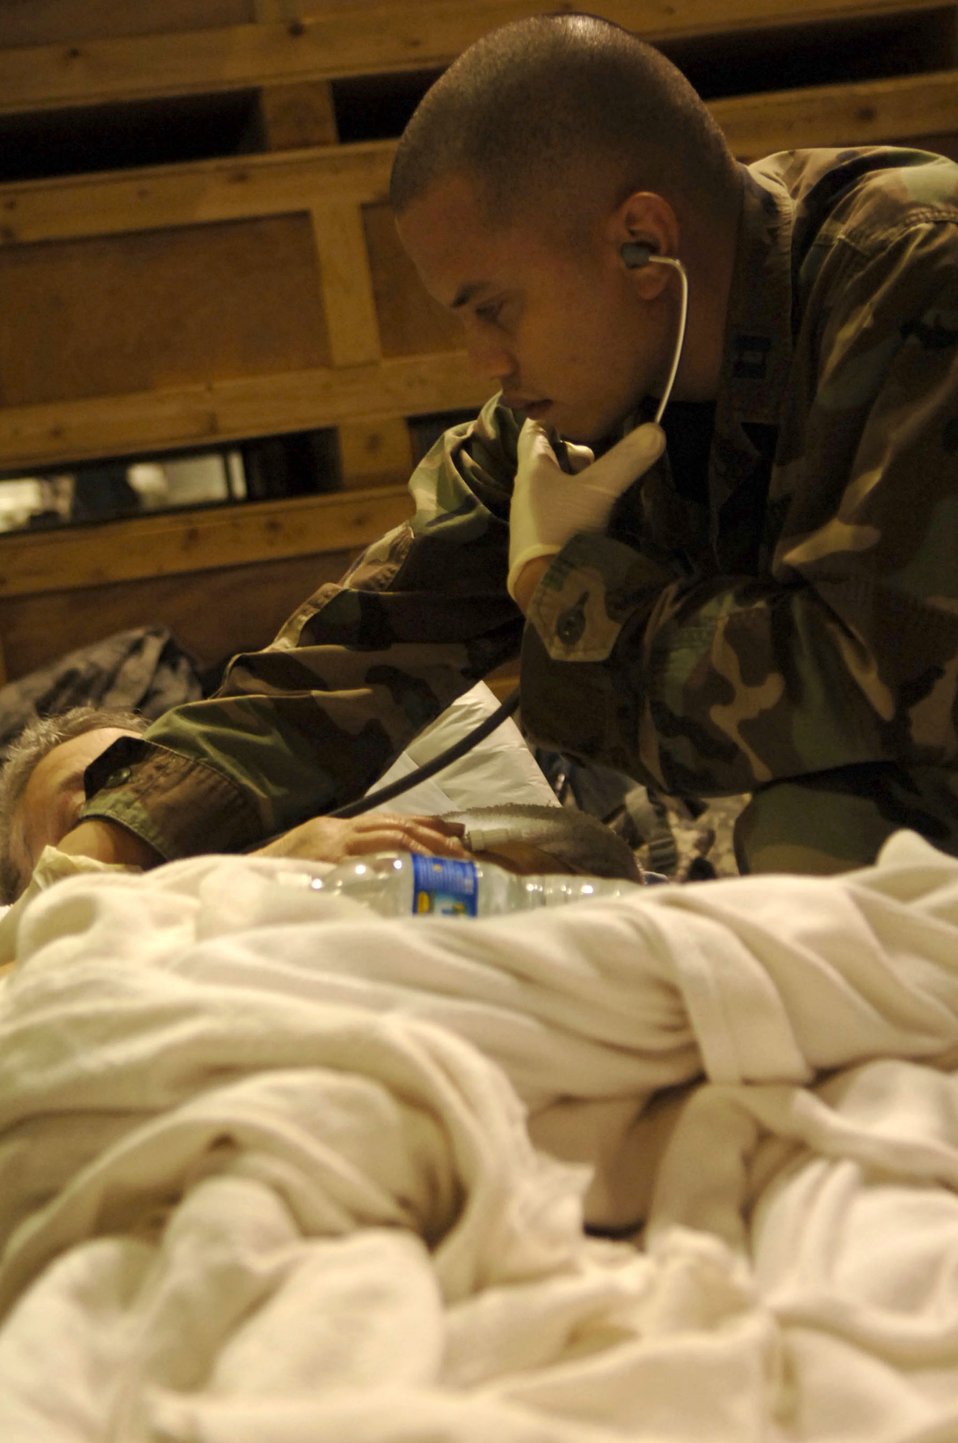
MacDill AFB medical team supports hurricane relief efforts

Capt. Alan Delgado tends to a patient waiting for evacuation in Corpus Christi, Texas, Sept. 11. The team is helping evacuate patients from a local area hospital. Air Force aircraft transported patients to safe locations out of Hurricane Ike's path. Captain Delgado is a nurse with a mobile aeromedical staging facility team from MacDill Air Force Base, Fla.